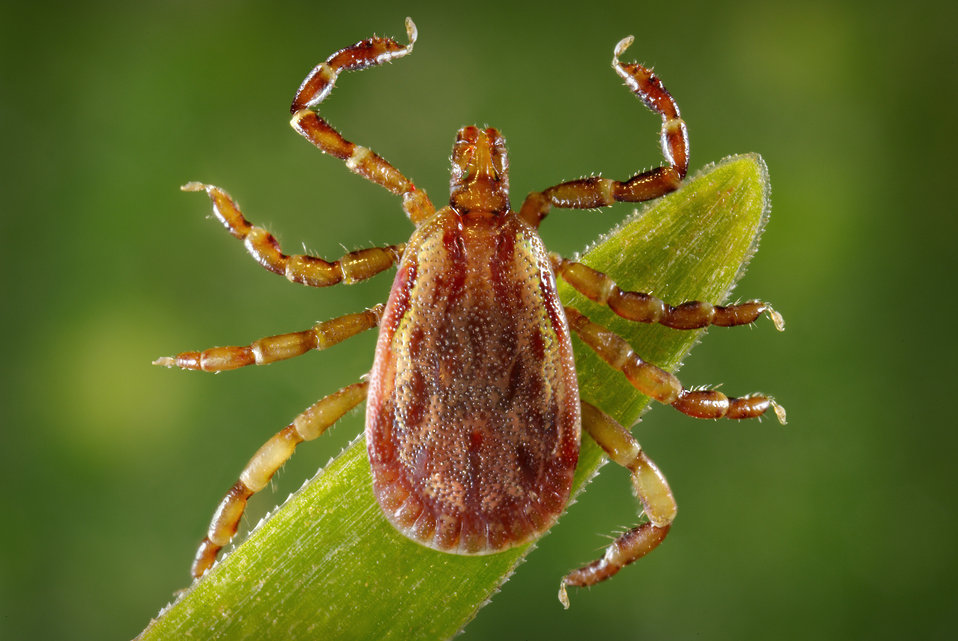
This 2008 photograph depicts a dorsal view of a male yellow dog tick, Amblyomma aureolatum, which is a vector of Rocky Mountain spotted fever (RMSF) in the country of Brazil.